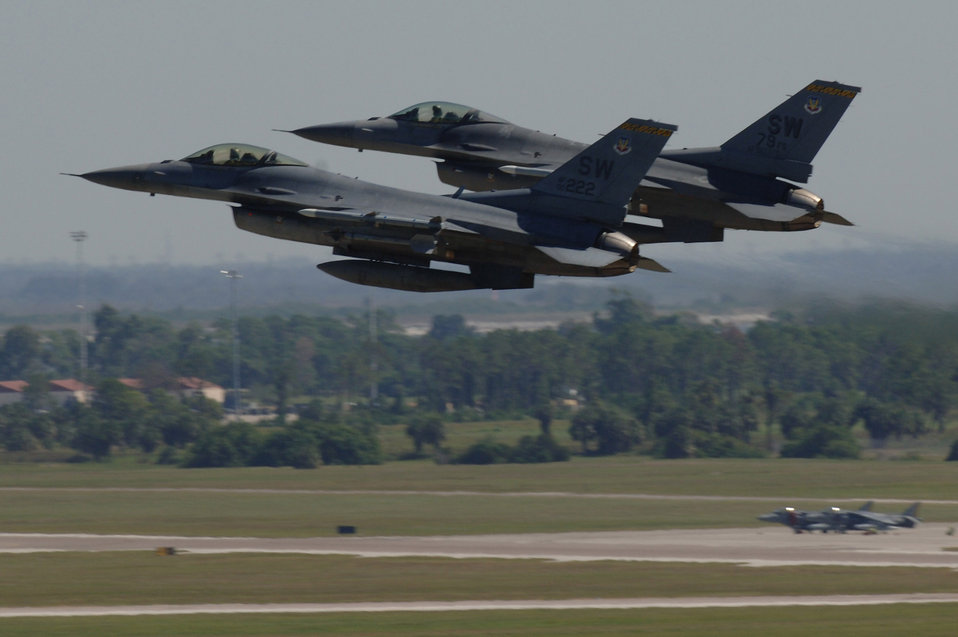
Crews sharpen skills at Atlantic Strike

Two F-16 Fighting Falcons take off from MacDill Air Force Base, Fla., for an Atlantic Strike exercise mission Oct. 24. The fighters, from the 20th Fighter Wing at Shaw AFB, S.C., were at MacDill for the U.S. Central Command bi-annual Atlantic Strike training event. Through realistic close-air support training, Atlantic Strike is designed to better prepare aircrews and Air Force joint tactical air controllers for deployments.